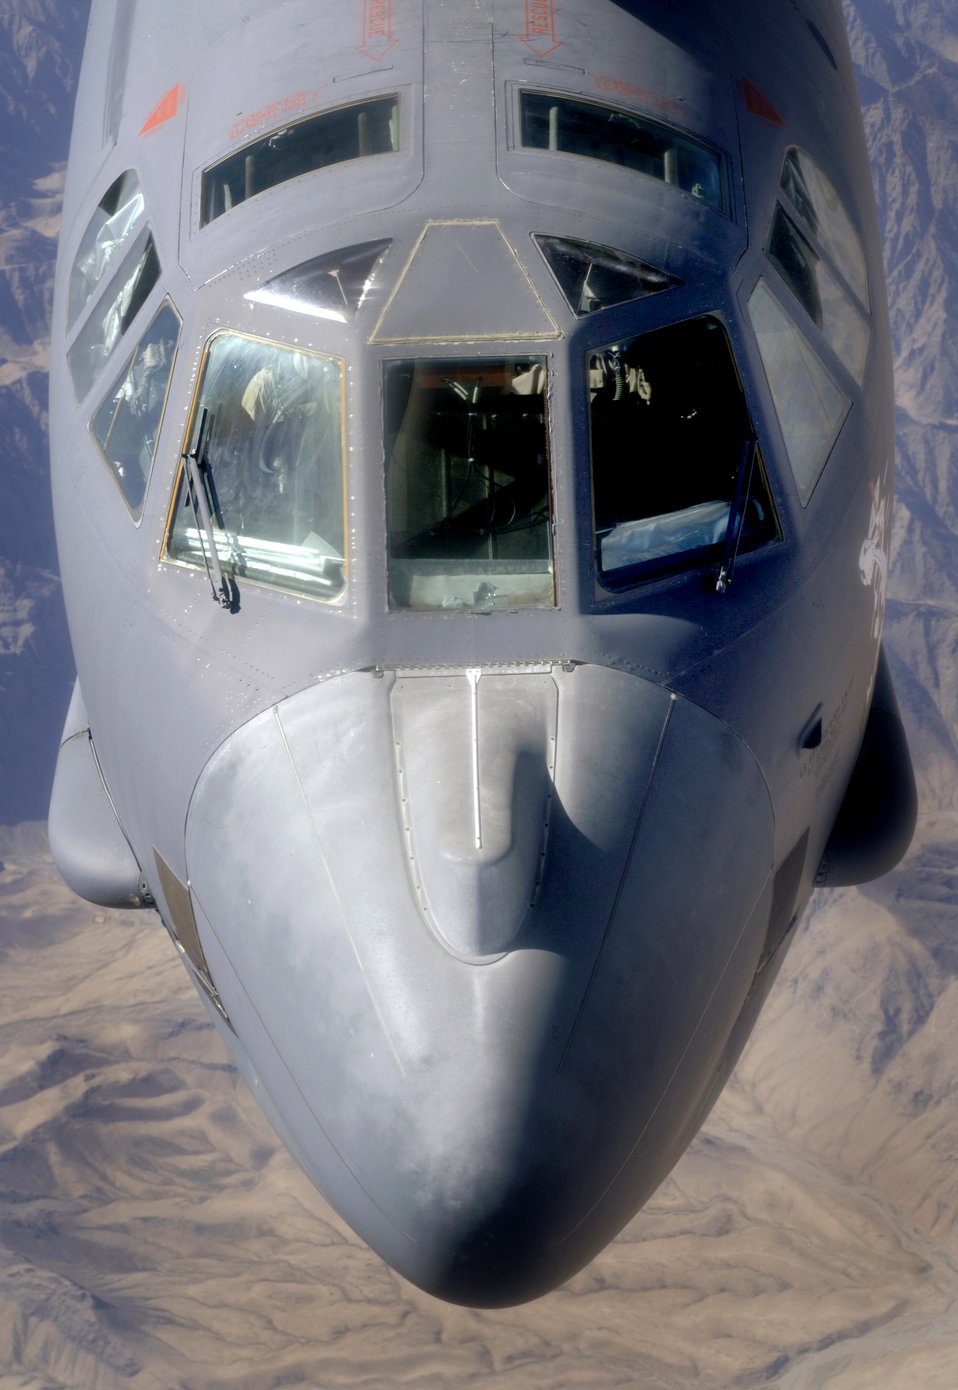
Tanker pride

OVER AFGHANISTAN (AFPN) -- A B-52 Stratofortress bomber refuels during a close-air-support mission. The KC-135 Stratotanker transfers fuel to the bomber at about 16 gallons per second. The bomber is from the 2nd Bomb Wing at Barksdale Air Force Base, La.